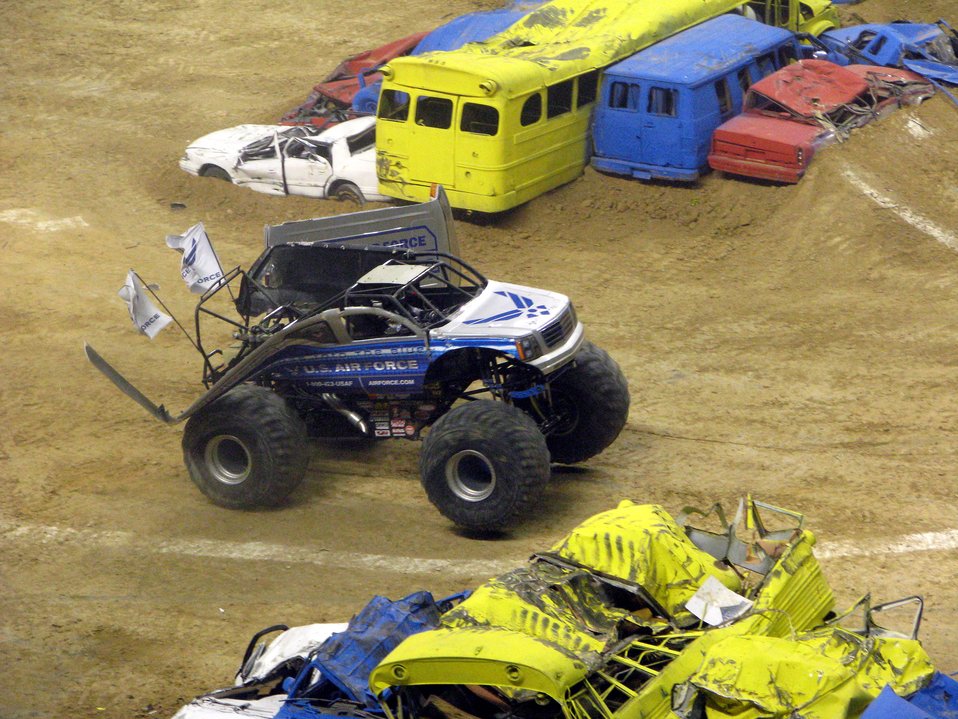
Afterburner steals the show

Afterburner, the Air Force's monster truck, dazzles the crowd Jan. 13 during the freestyle show at the 2008 San Antonio Monster Jam. Afterburner, an Air Force recruiting tool, is driven by Damon Bradshaw.